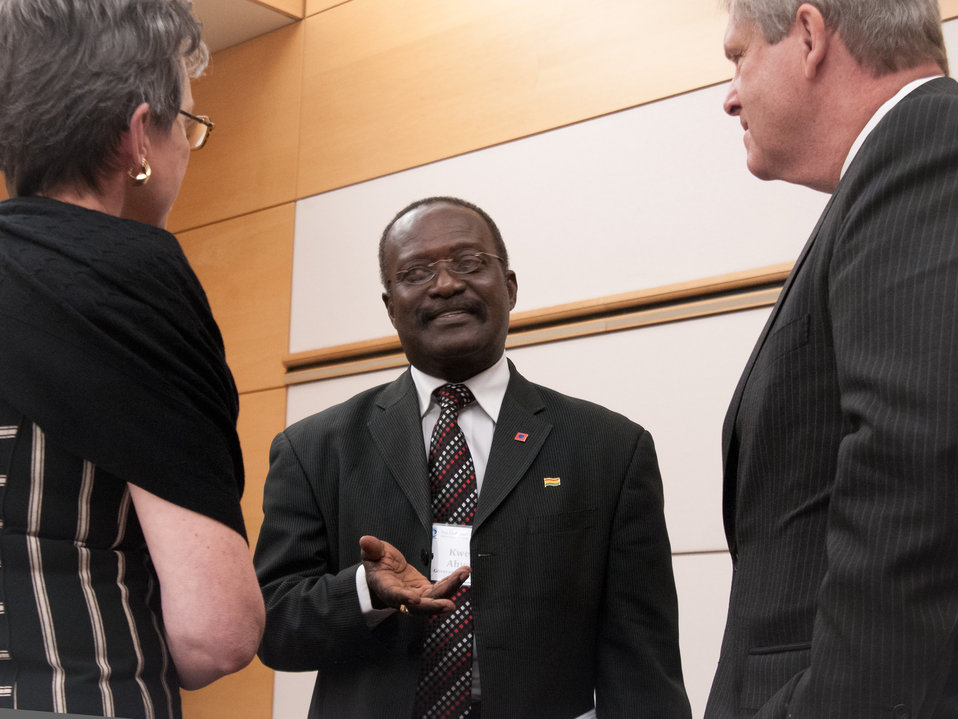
Tanzania, Minister of Food and Agriculture the Honorable Kwesi Ahwoi talked with Agriculture Secretary Tom Vilsack (right) and Undersecretary, Research Education and Economics Dr. Catherine Woteki (left), after the African Heads of State conference at the Ronald Reagan Federal Building in Washington, D.C., on Friday, May 18, 2012.